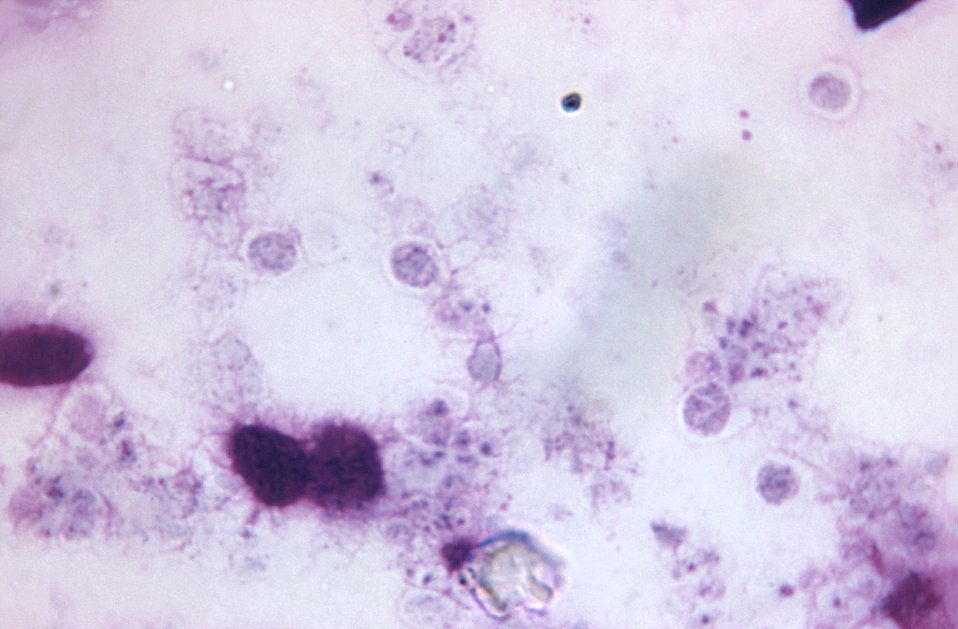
Smear of Pneumocystis jirovecii, formerly known as Pneumocystis carinii, concentrated from human lung. Giemsa stain.